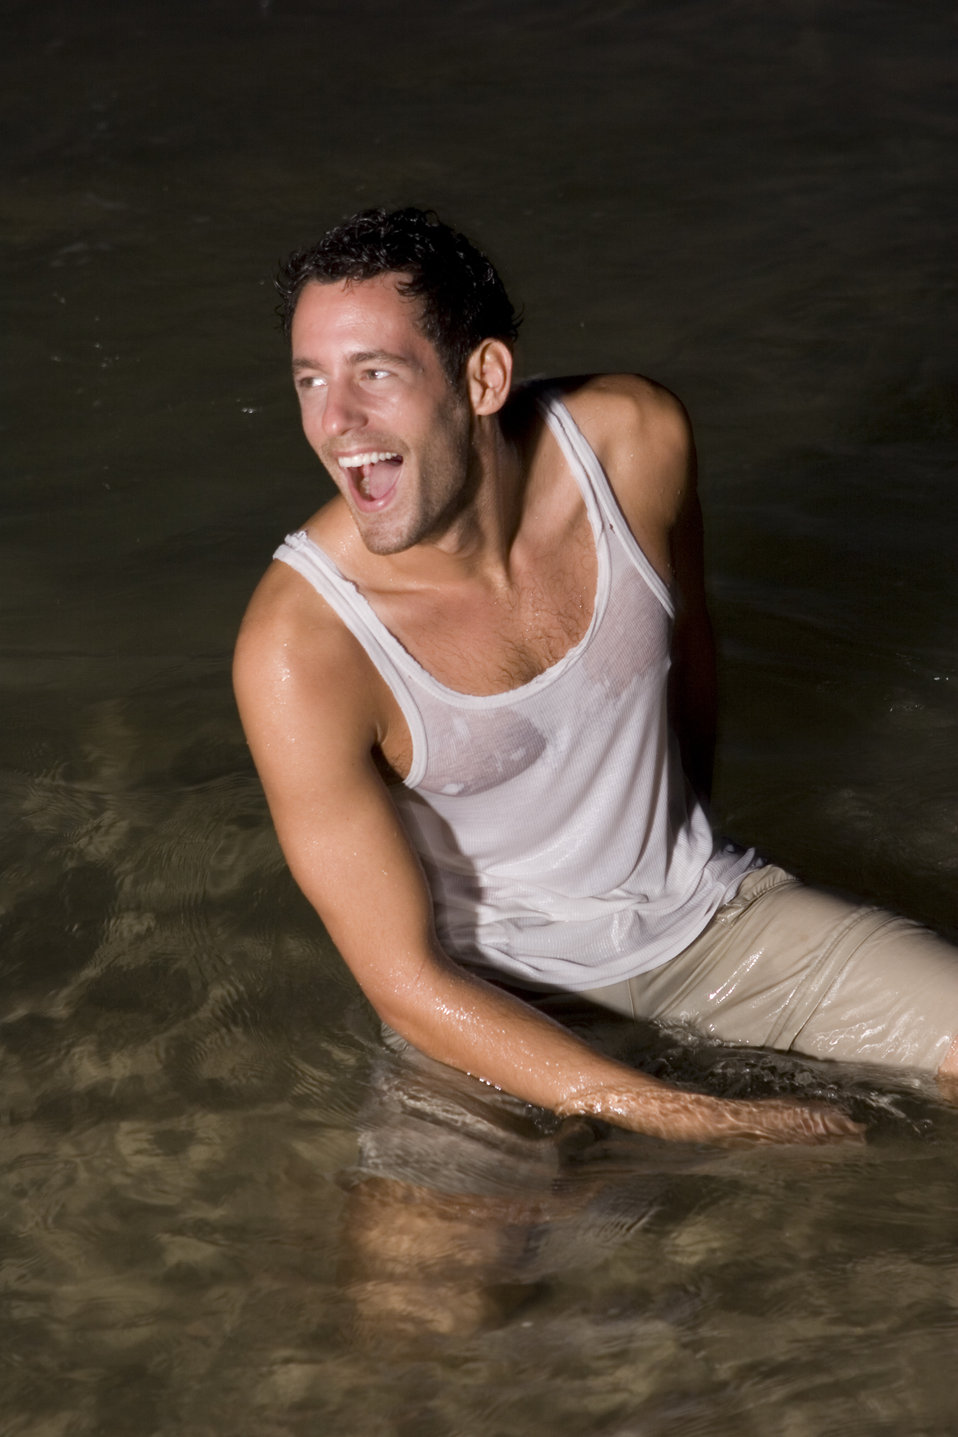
A photograph of Yehonathan Gatro.